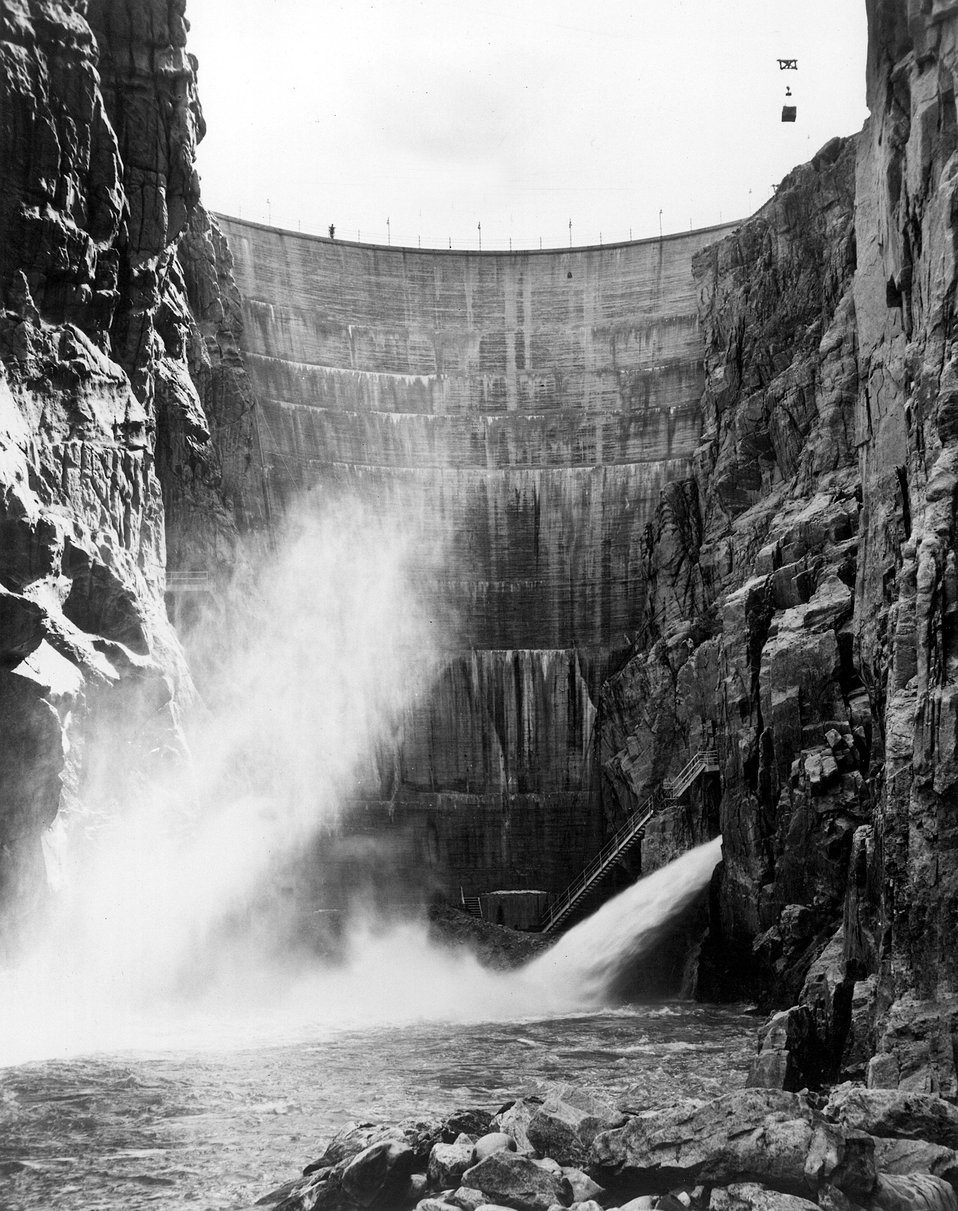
One of the first high concrete dams built by the Bureau of Reclamation is Buffalo Bill Dam on the Shoshone River, about 7 miles west of Cody, Wyoming. c. 1980